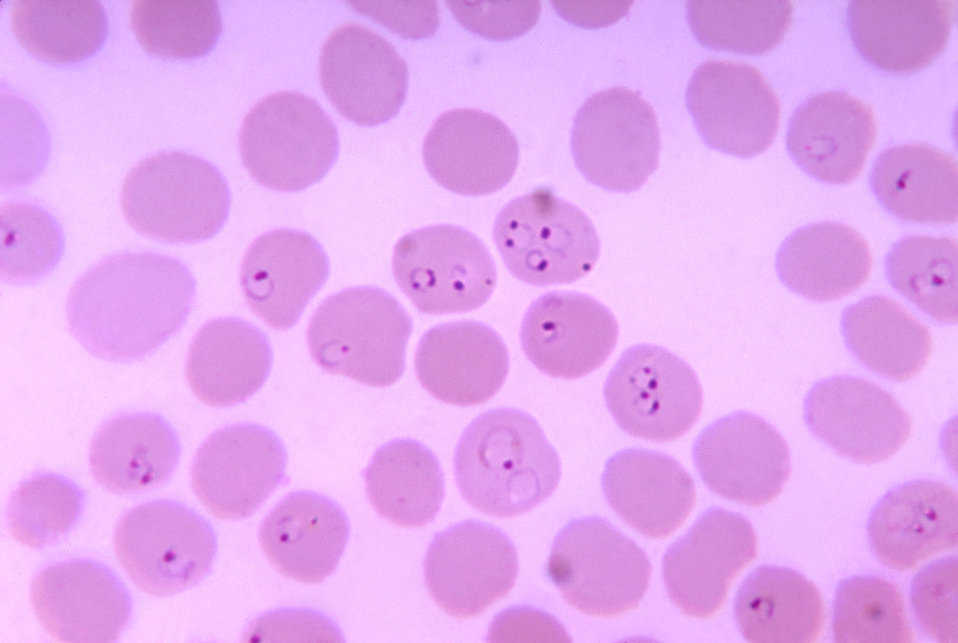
Photomicrograph of a blood smear showing Plasmodium falciparum rings in erythrocytes.